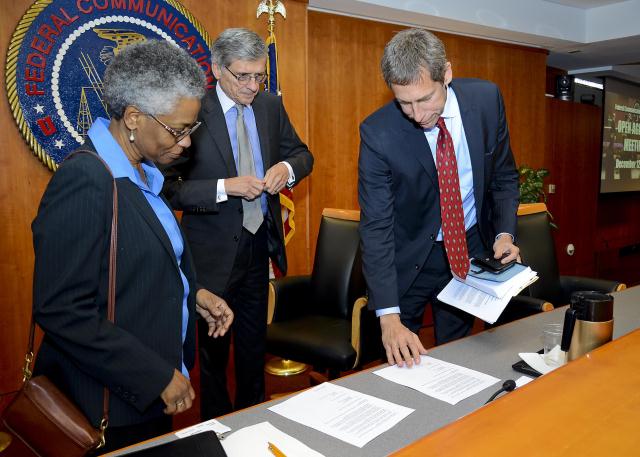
FCC and National Institute on Aging Signing Agreement to help Americans with hearing disabilities

Chairman Wheeler & the National Institute on Aging (NIA) Deputy Director Dr. Bernard signed an agreement today to partner on research into the use of modern IP technology to improve & make more accessible phone service to Americans with hearing disabilities.